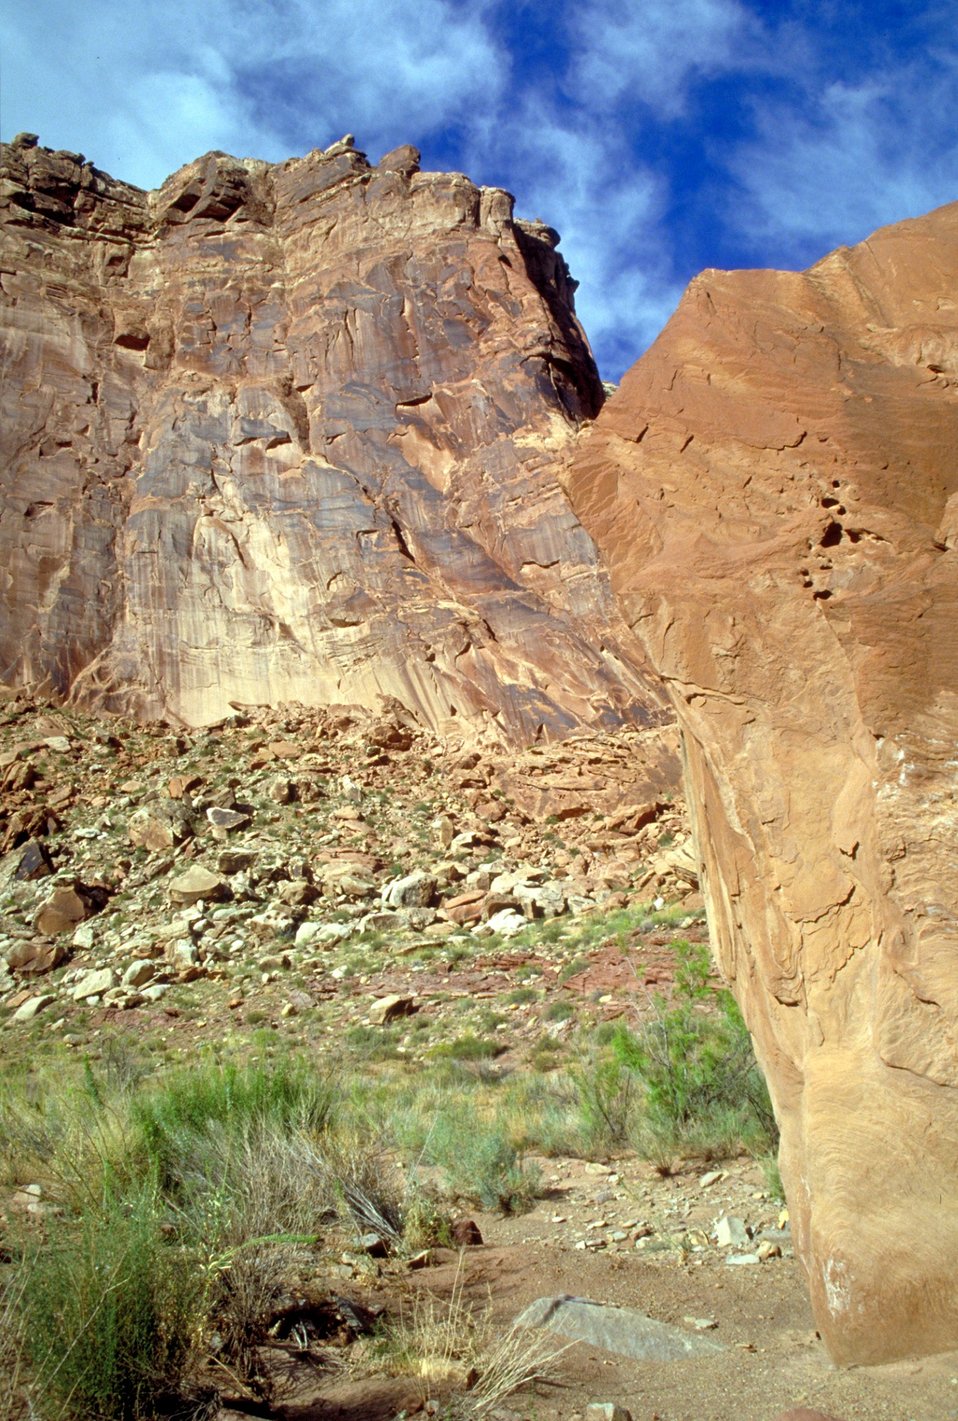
Black Dragon Wash near Green River, Utah.